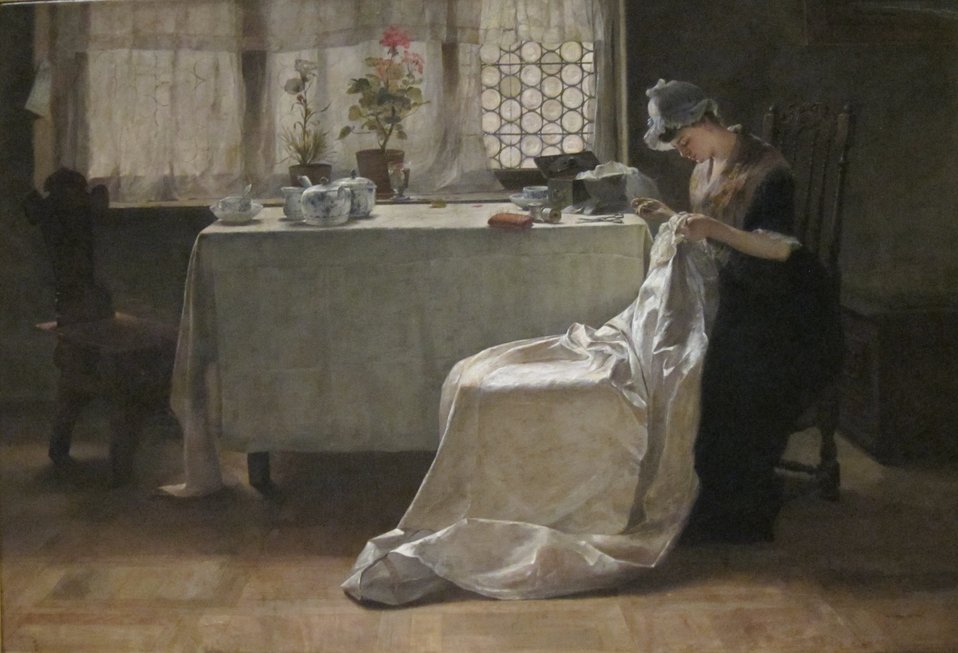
'Blissful Hours' by Samuel Richards, Dayton Art Institute